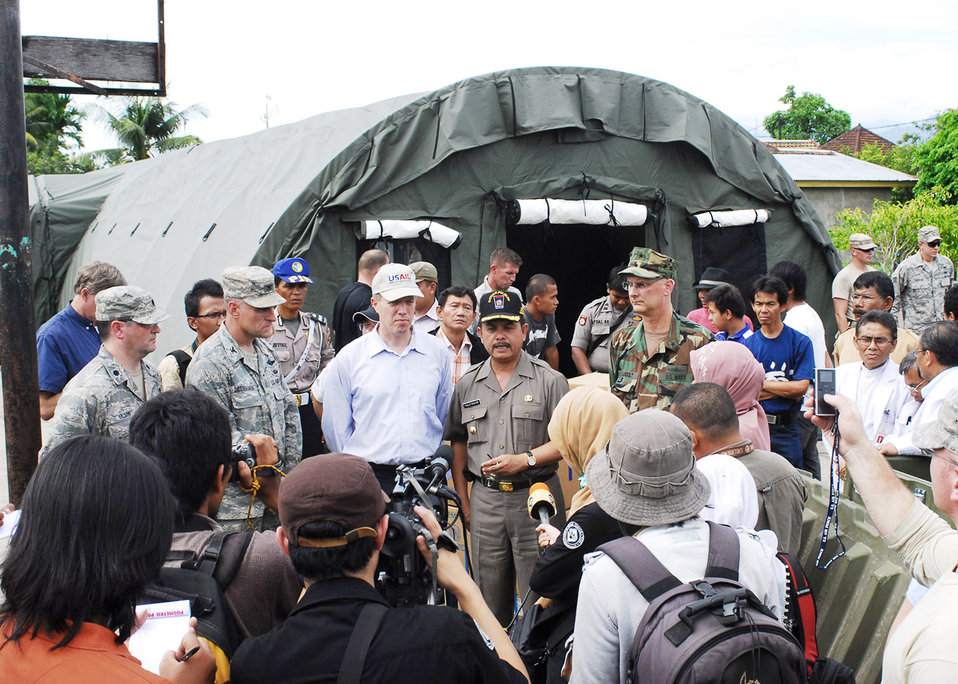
HARRT arrives in Indonesia

Mayor of Padang, Fauzi Bahar, speaks with local media in Padang, Indonesia, Oct. 6, 2009, to welcome and thank the Air Force humanitarian assistance rapid response team for bringing much needed medical assistance to the earthquake ravaged region.